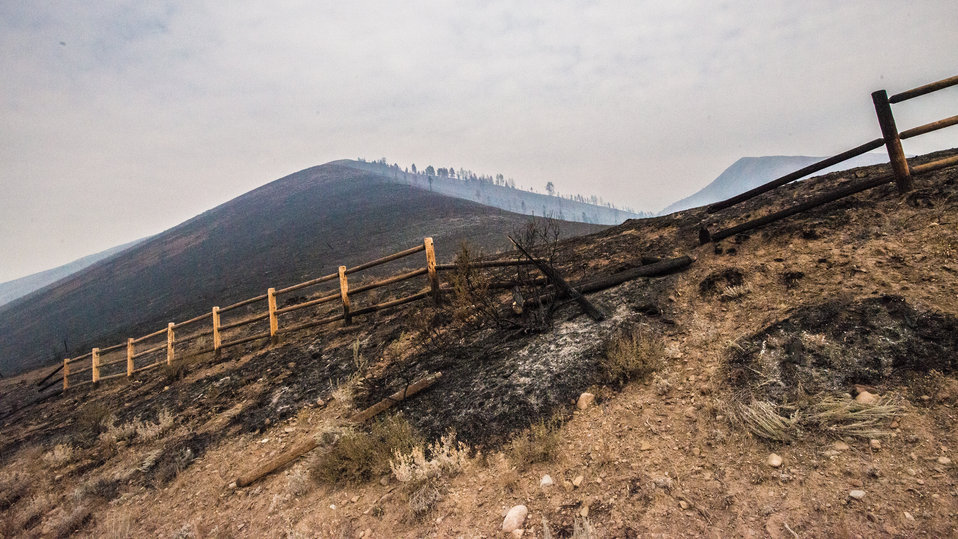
Thanks to the efforts of Wildland Firefighters, support crews and other first responders, homes and residential communities were (with few exception) saved from major damage, from the Beaver Creek Fire, near Hailey, ID, in the interface of U.S. Department of Agriculture (USDA) Forest Service (FS) and Sawtooth National Forest and Bureau of Land Management (BLM) lands, on Wednesday, Aug 21, 2013. In this community, major sections of hillside were charred, some suffered burnt trees, grass lands and fences.